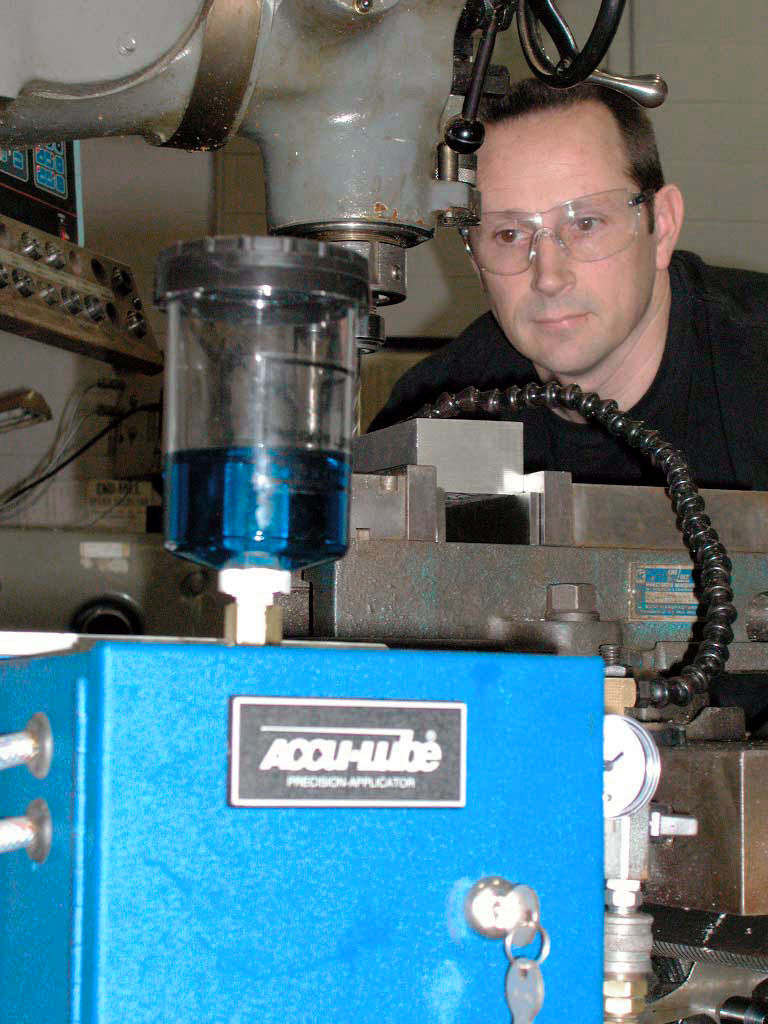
Accu-Lube saves time, money

WRIGHT-PATTERSON AIR FORCE BASE, Ohio -- Staff Sgt. Nathan Moffitt drills through a 3-inch by 5-inch aluminum block using an Accu-Lube unit. The environmentally friendly Accu-Lube uses soybean-based biodegradable oil and compressed air to lubricate metal components that are being machined or drilled. Sergeant Moffitt is assigned to the 445th Maintenance Squadron's machine shop here.